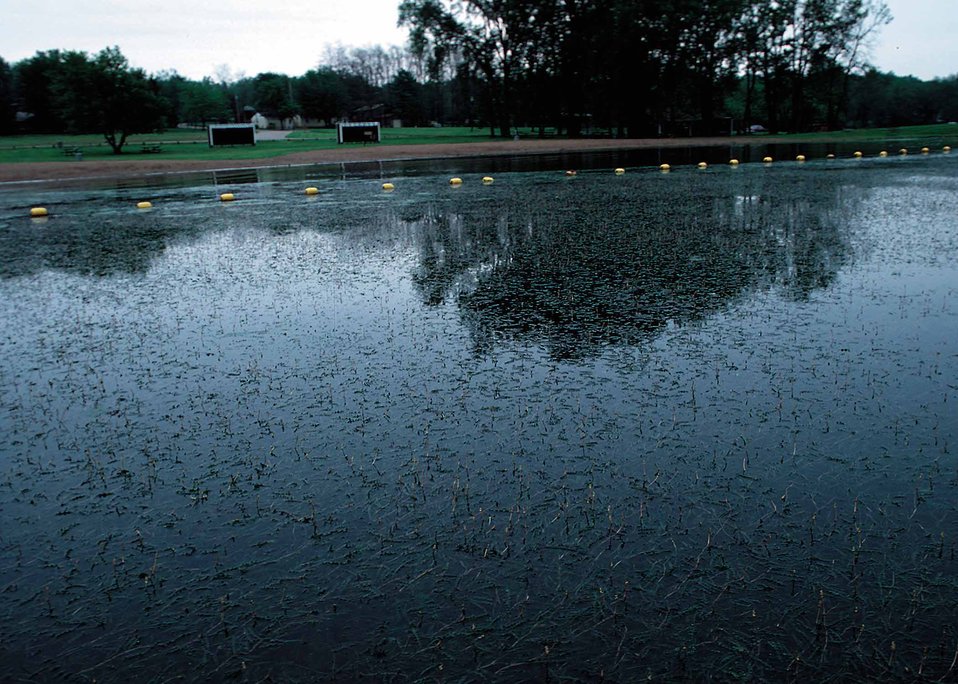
Algae in Union Grove Lake in Tama County in the early 1990's, before a water quality project.